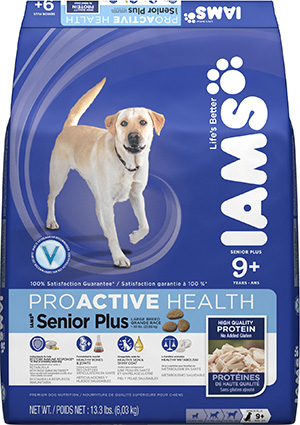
RECALLED – Dog and Cat foods - Dry

August 14, 2013 – Product Recall – P&G Voluntarily Recalls Limited Quantity of Dry Pet Food Due to Possible Health Risk.